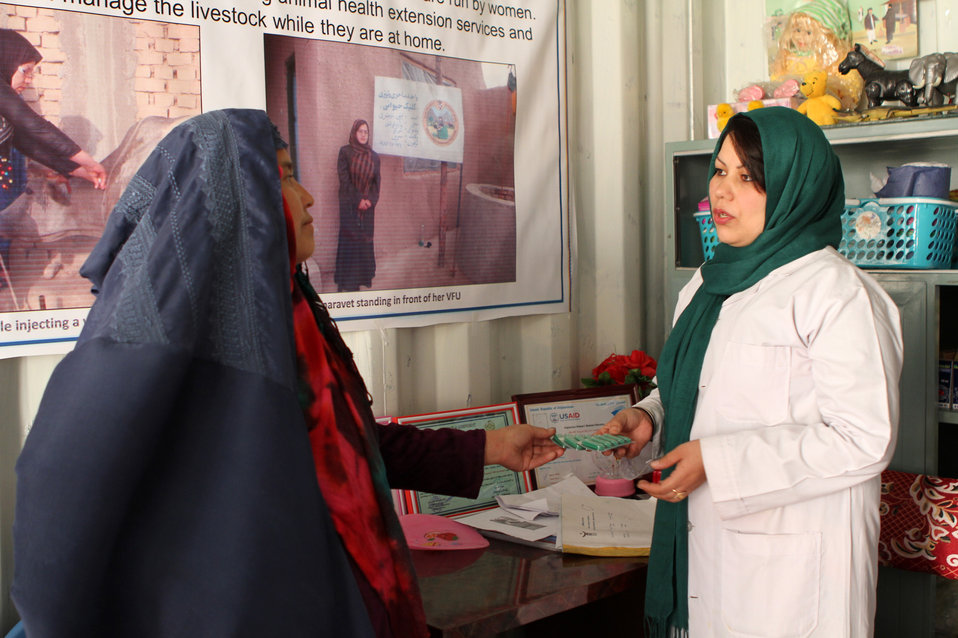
USAID funded Development of Veterinary Field Units